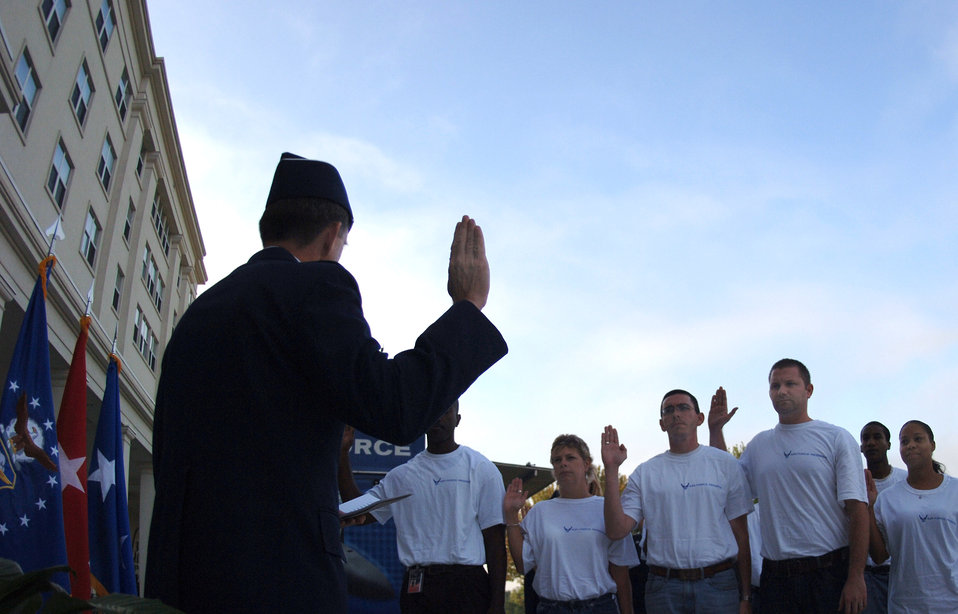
Air Force Week Atlanta kicks off

Maj. Gen. Scott Hammond administers the oath of enlistment to nine new recruits during a proclamation ceremony Oct. 8 in Marietta, Ga., which kicked off the Air Force Week Atlanta events. Atlanta is one of six cities throughout the country chosen to host an Air Force Week Oct. 8 to 14. General Hammond is the commander of the Georgia Air National Guard.